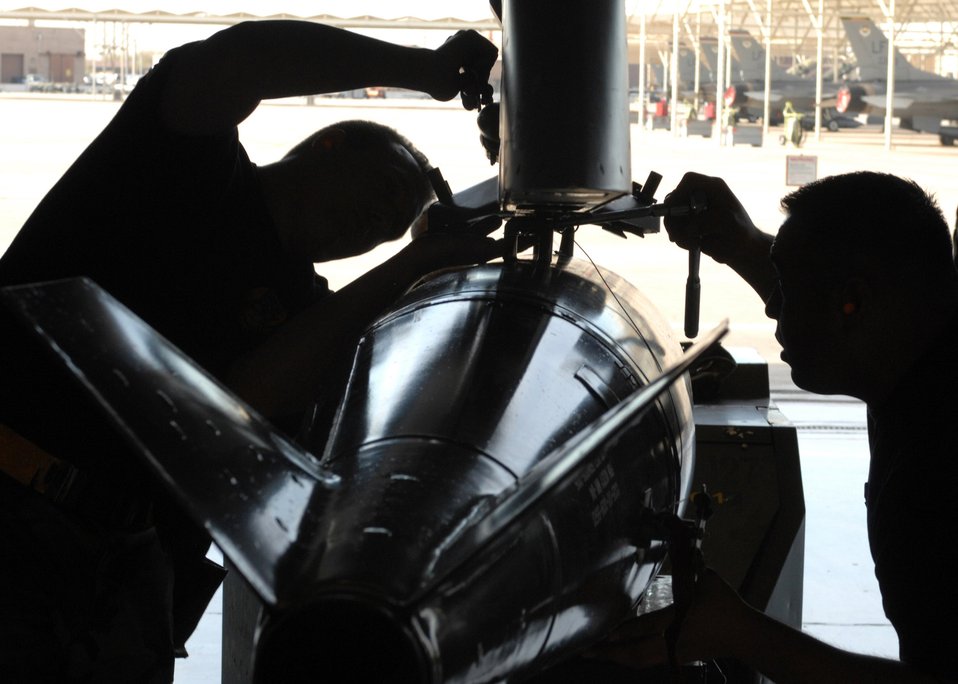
Showing their stuff

Staff Sgt. Stephen Waide (left) and Senior Airman Hector Miranda secure a bomb onto an F-16 Fighting Falcon Feb. 8 during a weapons load crew competition at Luke Air Force Base, Ariz. The two Airmen are with the 61st Aircraft Maintenance Unit.